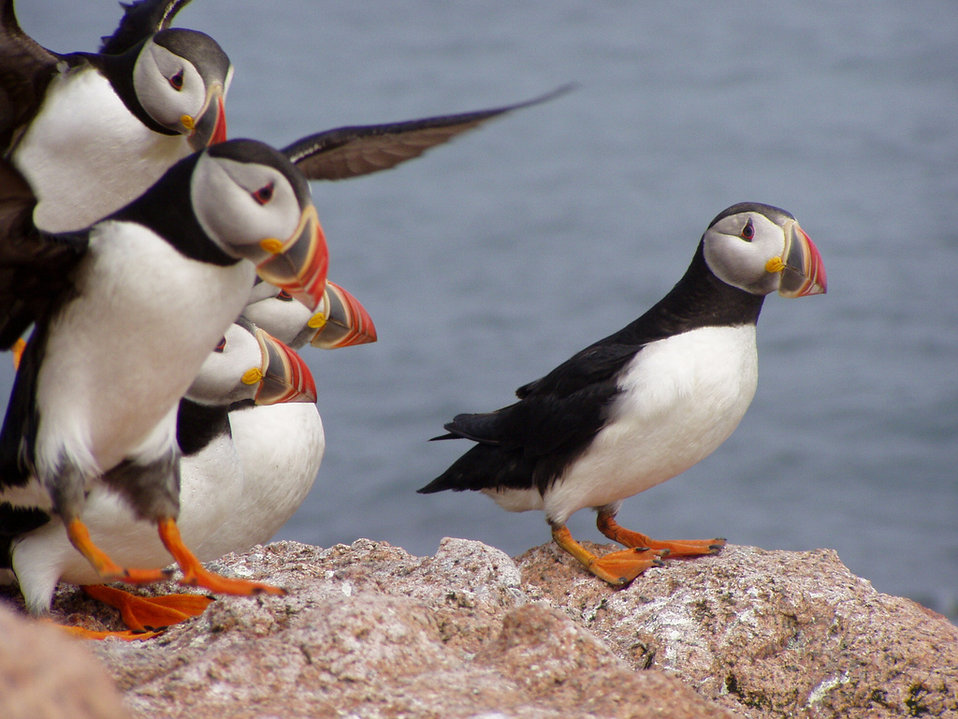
puffins at Maine Coastal Islands NWR, fws